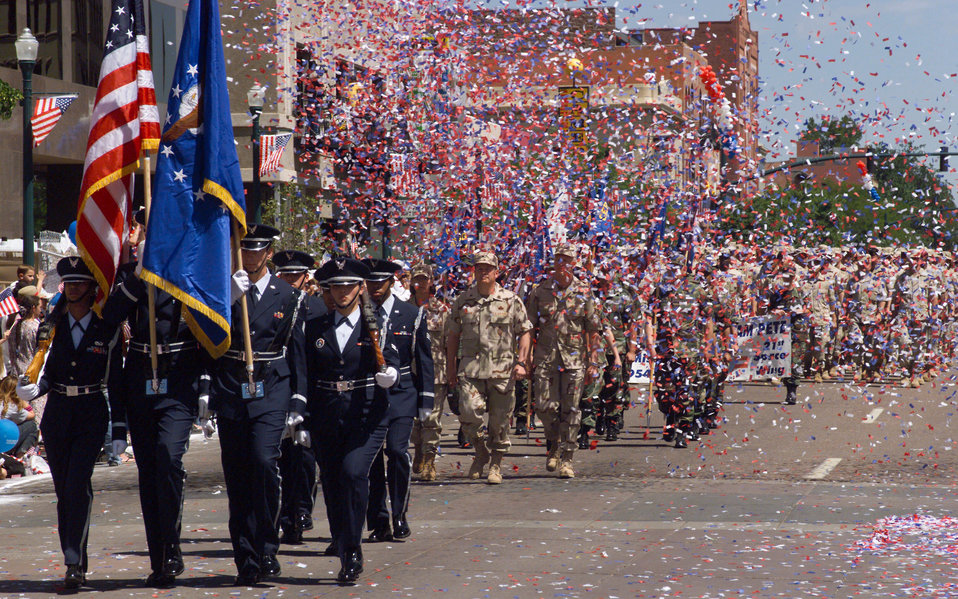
Homecoming

COLORADO SPRINGS, Colo. -- Members of the 21st Space Wing Honor Guard lead Airmen from the 21st SW during a welcome home parade here June 5.